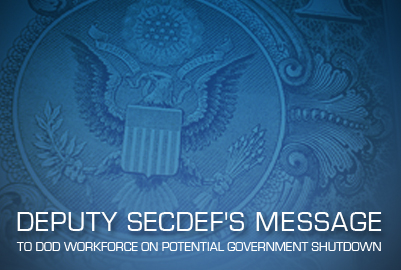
Deputy SecDef's message